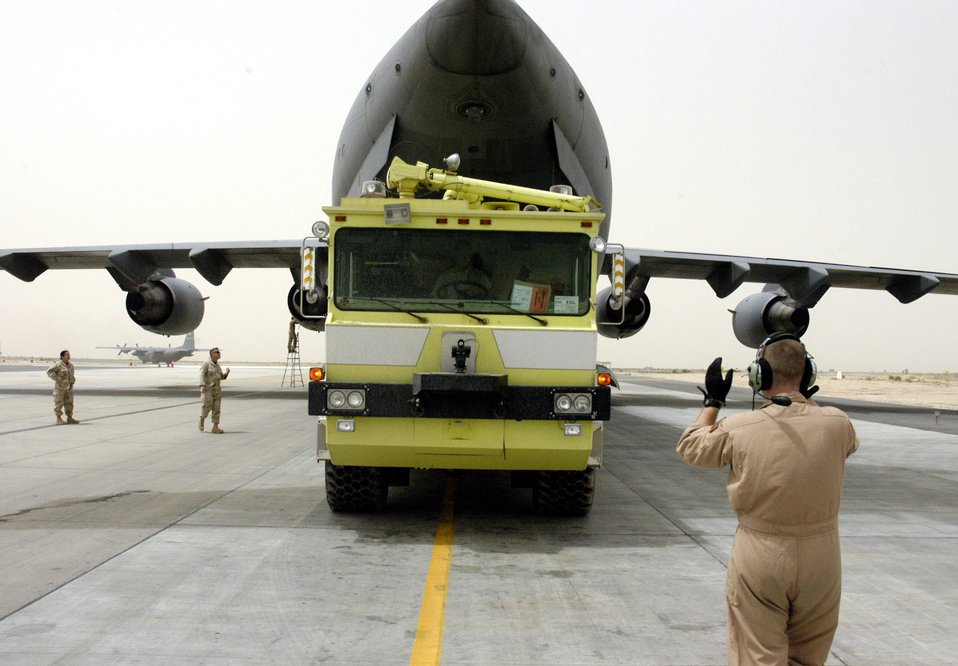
Air Force, Navy deliver firetrucks donated by Baltimore

Airmen from the 386th Expeditionary Logistics Readiness Squadron load a fire and rescue truck April 19 inside a C-17 Globemaster III in Southwest Asia. The truck is one of two donated by Baltimore officials and bound for Mazar-i-Sharif Airport in Northern Afghanistan.